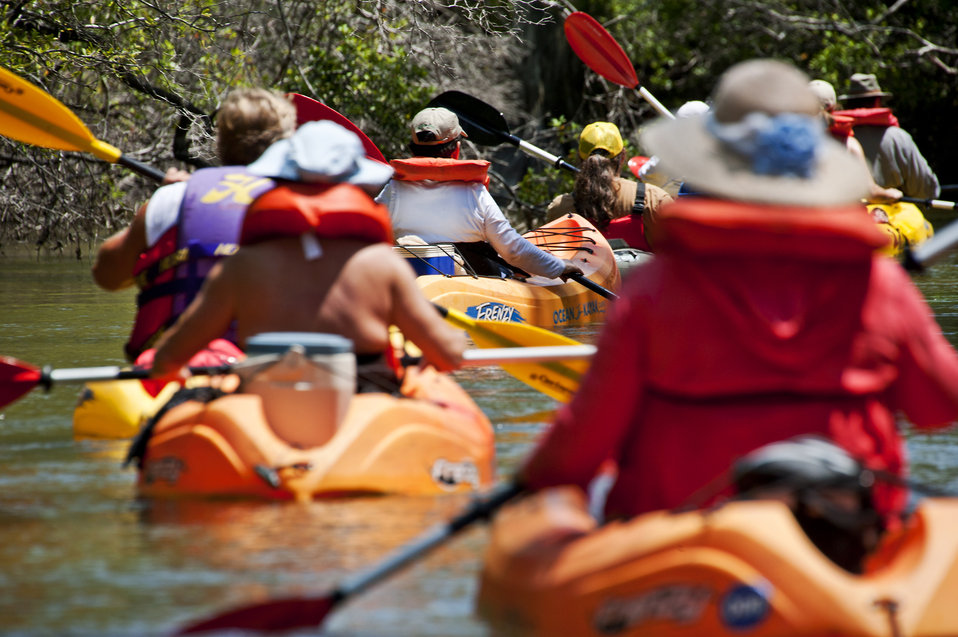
Earth Day Kayak Tour

Kayakers drift down Turkey Creek April 21, 2011, at Eglin Air Force Base, Fla., during the base's second annual Earth Day kayak tour and celebration.